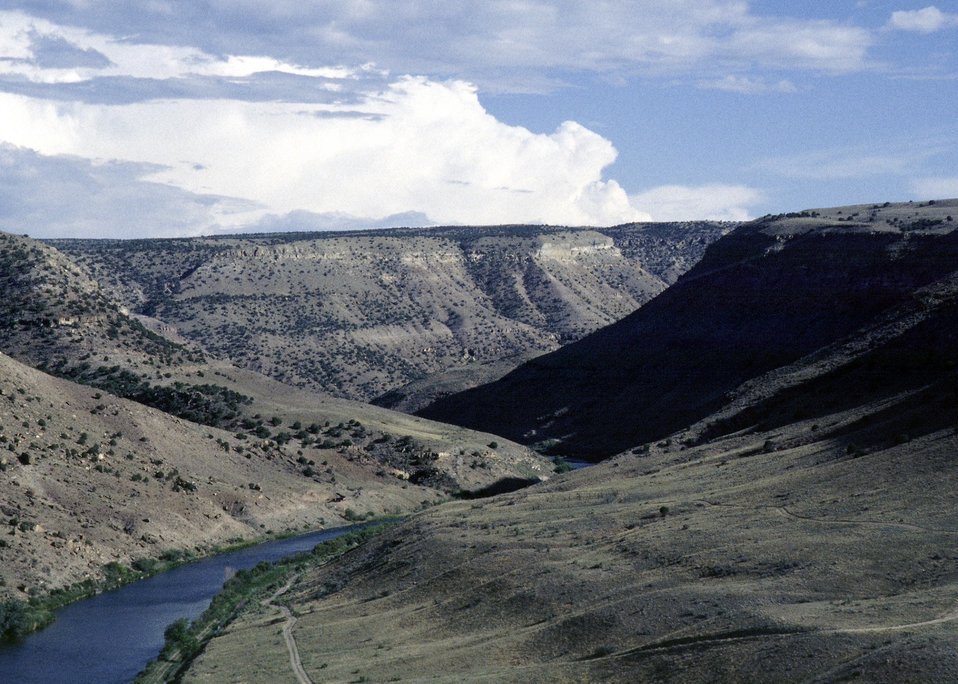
Rafting